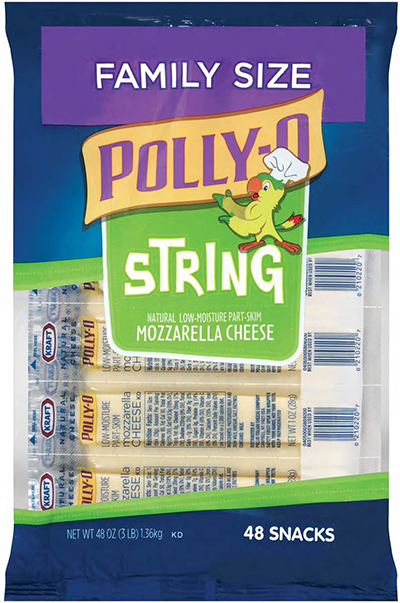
RECALLED – Cheese

October 25, 2013 – Product Recall – Kraft Voluntarily Recalls Some Varieties of Kraft And Polly-O String Cheese And String Cheese Twists Due to Premature Spoilage.